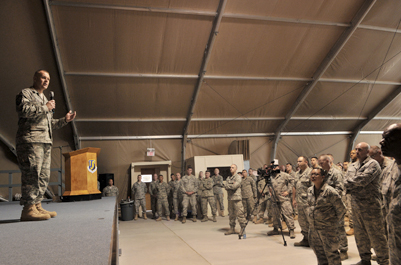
Chief Master Sergeant of the Air Force James Roy Visits Manas

Chief Master Sergeant of the Air Force James A. Roy speaks to Airmen June 11, 2011, at the Transit Center at Manas, Kyrgyzstan.